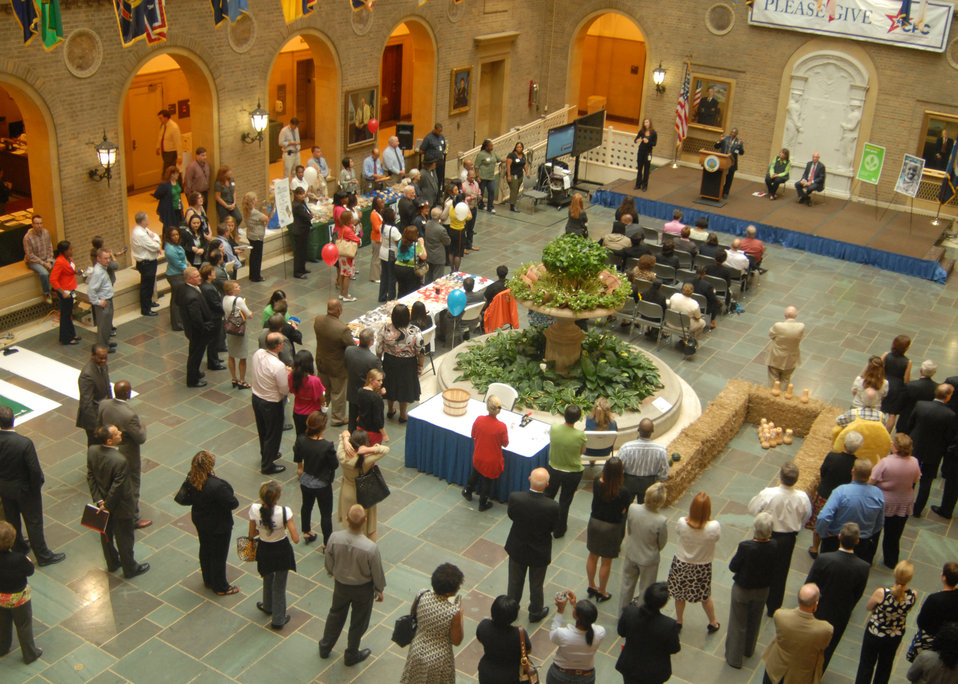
The U.S. Department of Agriculture (USDA) held its’ opening ceremony for the 2012 Combined Federal Campaign on Tuesday, Sept. 18, 2012 at the USDA Whitten Building, in Washington, D.C. USDA has set a goal of raising just under $2 million from their employees in the national capital area. The theme for this year’s CFC campaign is 'Choose Hope'.